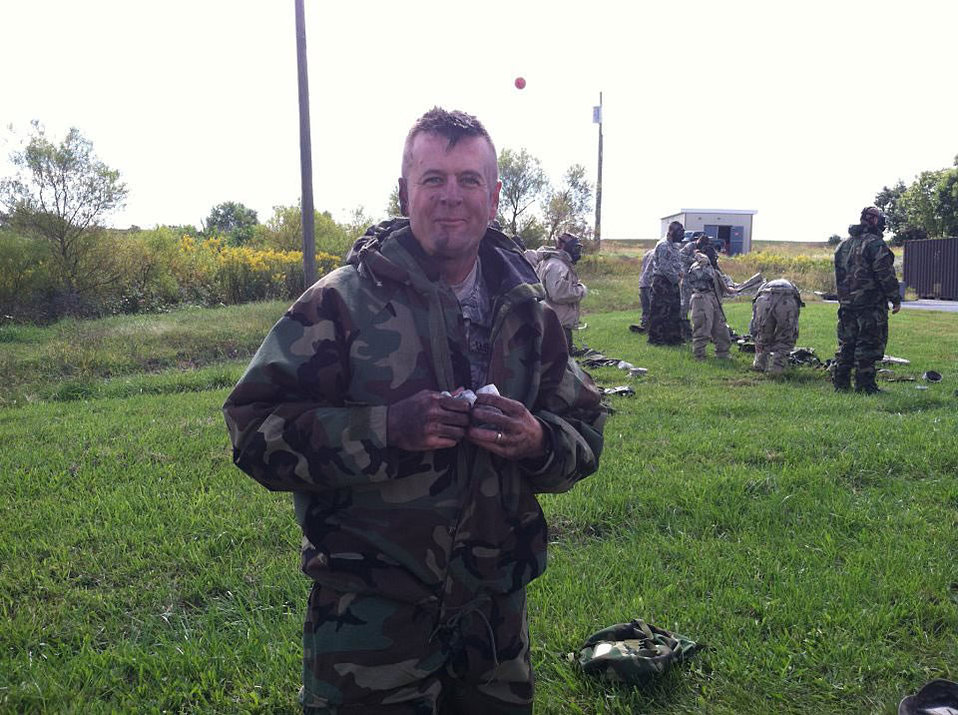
Darrell Butler -- NCTC

Army Sergeant Darrell Butler works at NCTC.